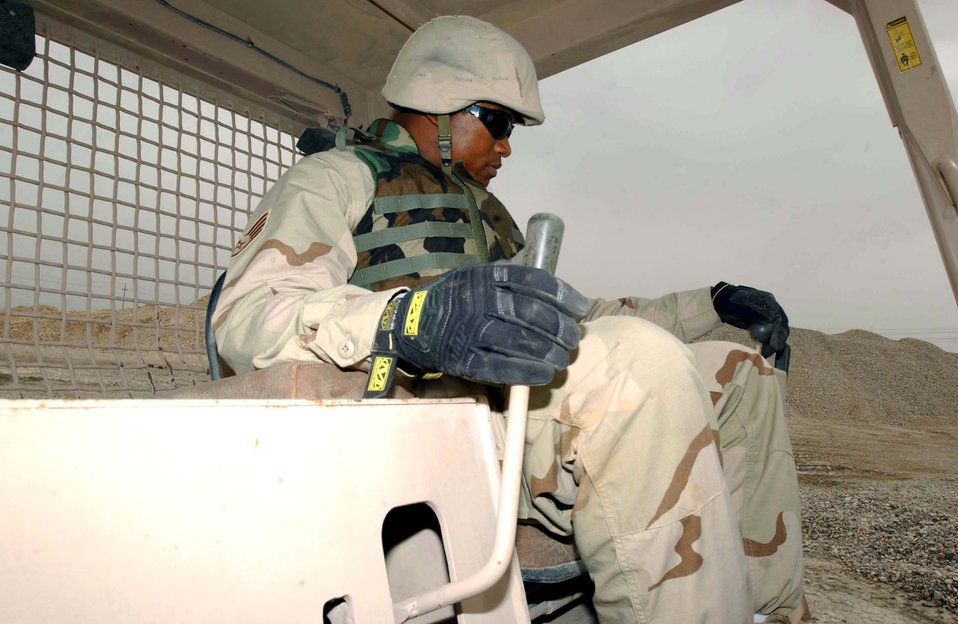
Dozing on the job

TALLIL AIR BASE, Iraq -- Staff Sgt. Ronald Sellers moves dirt with a bulldozer here. He is assigned to the 407th Expeditionary Logistics Readiness Squadron.